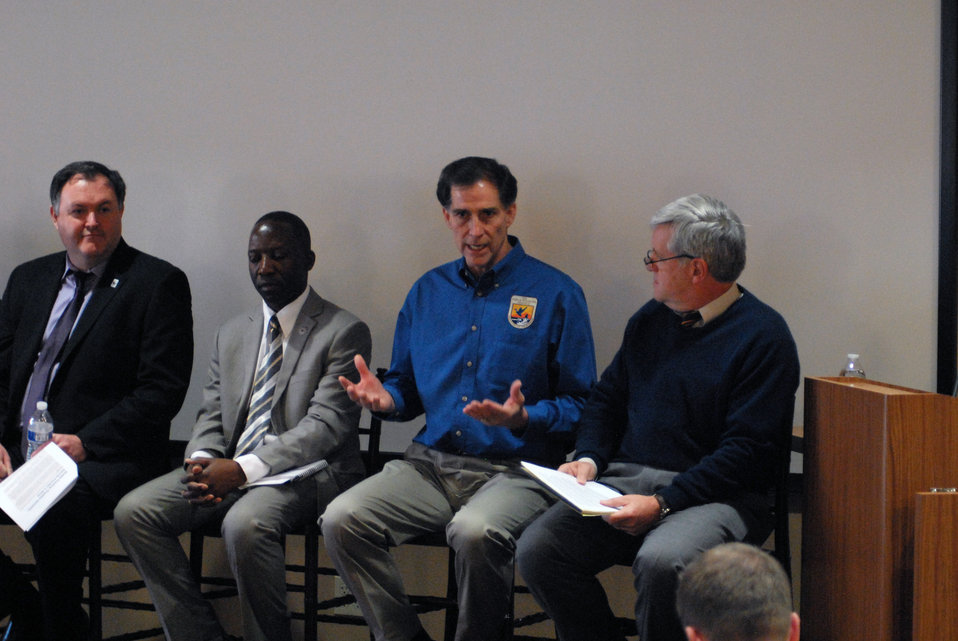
Crawford Allan (TRAFFIC), Jimmiel Mandima (African Wildlife Foundation), USFWS Director Dan Ashe, and Panel Moderator David Hayes discuss how the U.S. should tackle the poaching crisis.